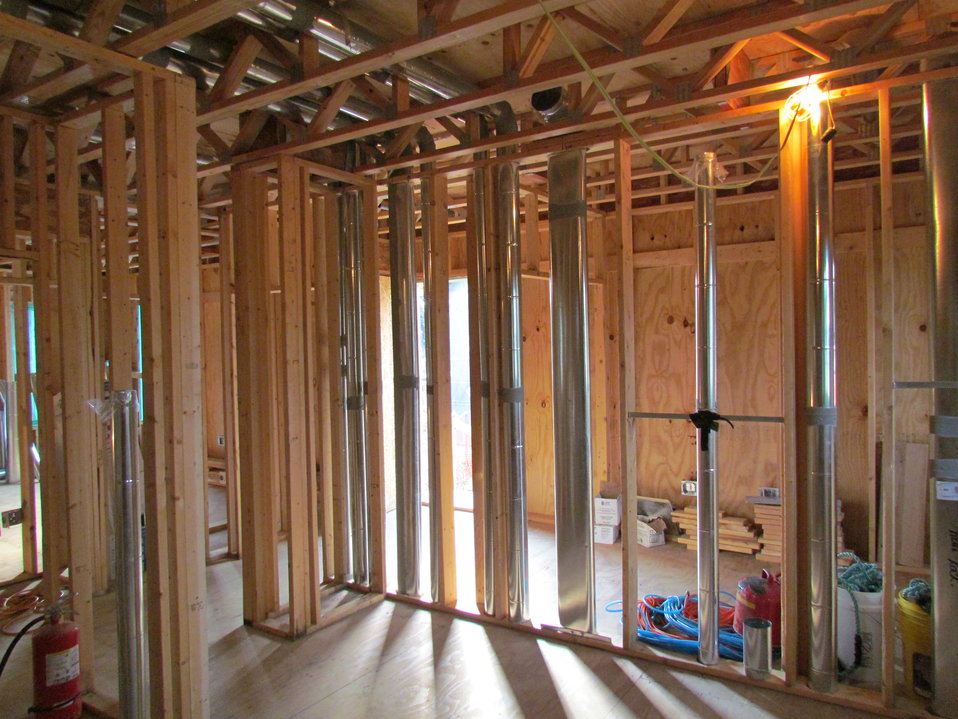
Net-Zero Energy Residential Test Facility - Photo showing duct work being installed in first floor interior walls. Picture taken looking towards breezeway entry.